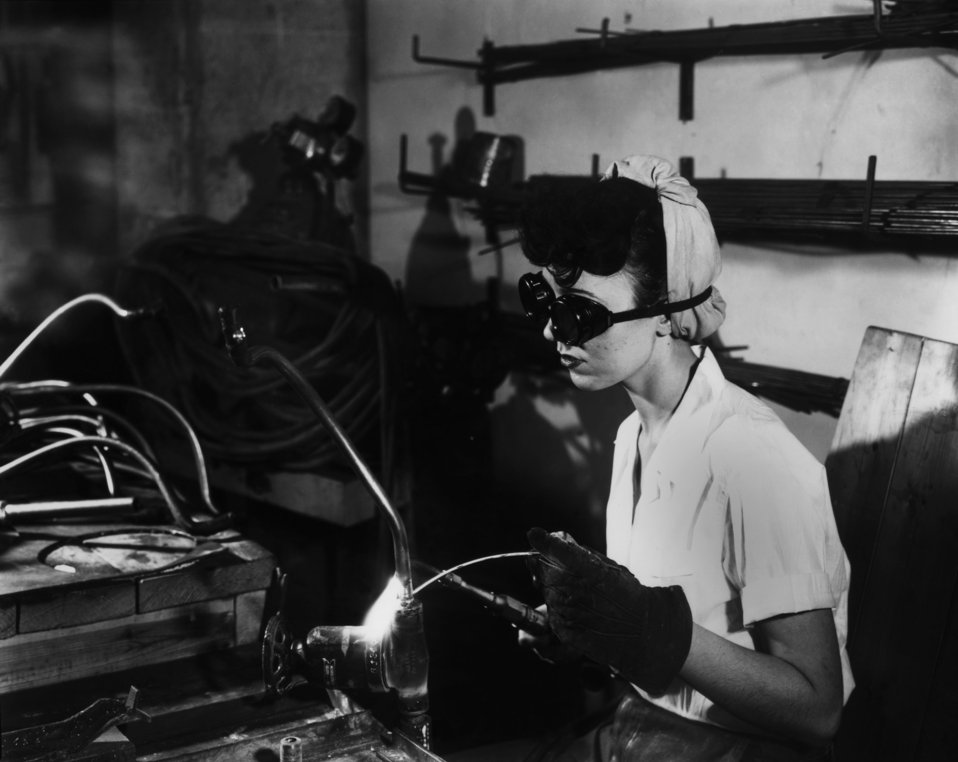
Welding at K-25 Oak Ridge

K-25-69 DOE photo by Ed Westcott

Welding at K-25 Oak Ridge Tennessee February 1945